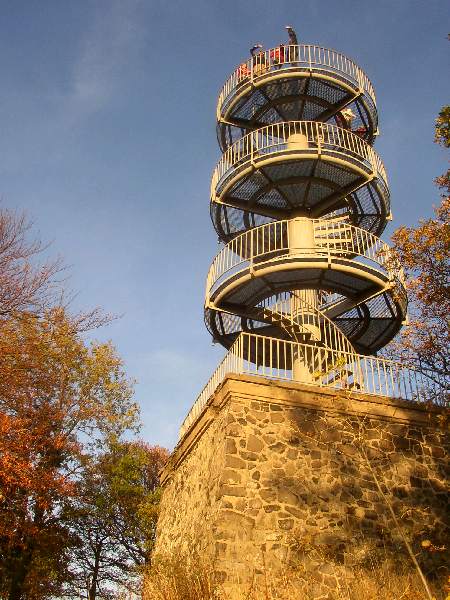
2004-Varhošť